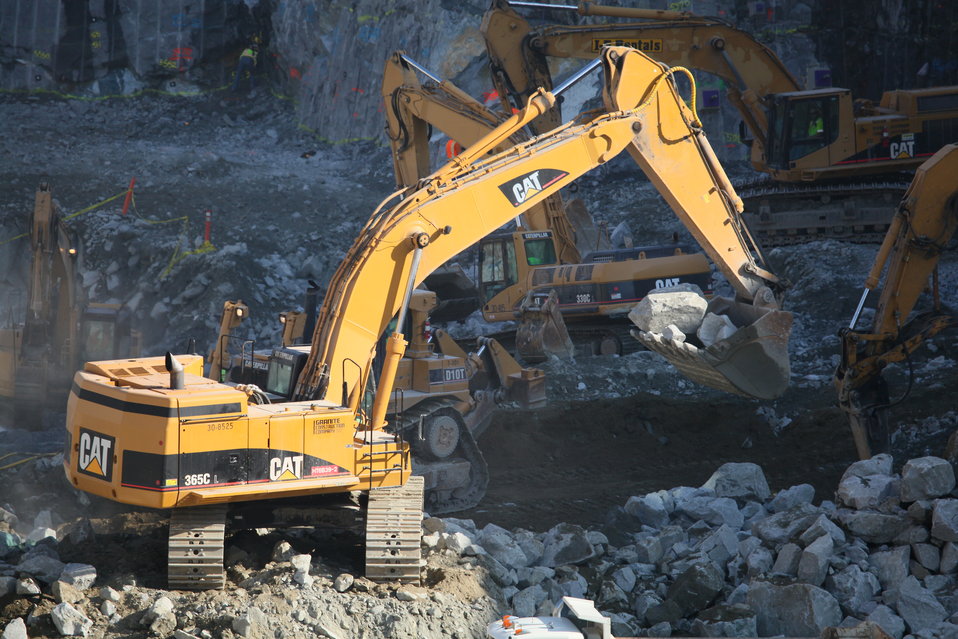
Excavation at the Folsom auxiliary spillway

Crews and equipment continue excavation at the Folsom Dam auxiliary spillway in Folsom, Calif., Feb. 17, 2012. The spillway will allow Folsom Dam to release water sooner and more safely. The project is part of the Folsom Dam Joint Federal Project, a joint effort of the U.S. Army Corps of Engineers Sacramento District, the U.S. Bureau of Reclamation, the Central Valley Flood Protection Board and the Sacramento Area Flood Control Agency to improve the safety of the dam and reduce flood risk for the greater Sacramento area.